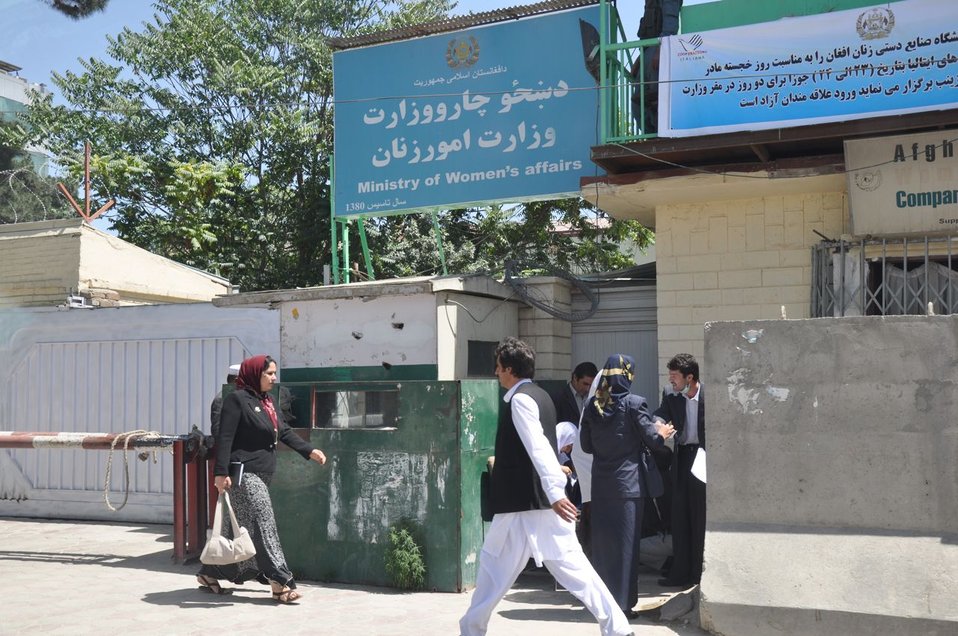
Mother's Day in Afghanistan